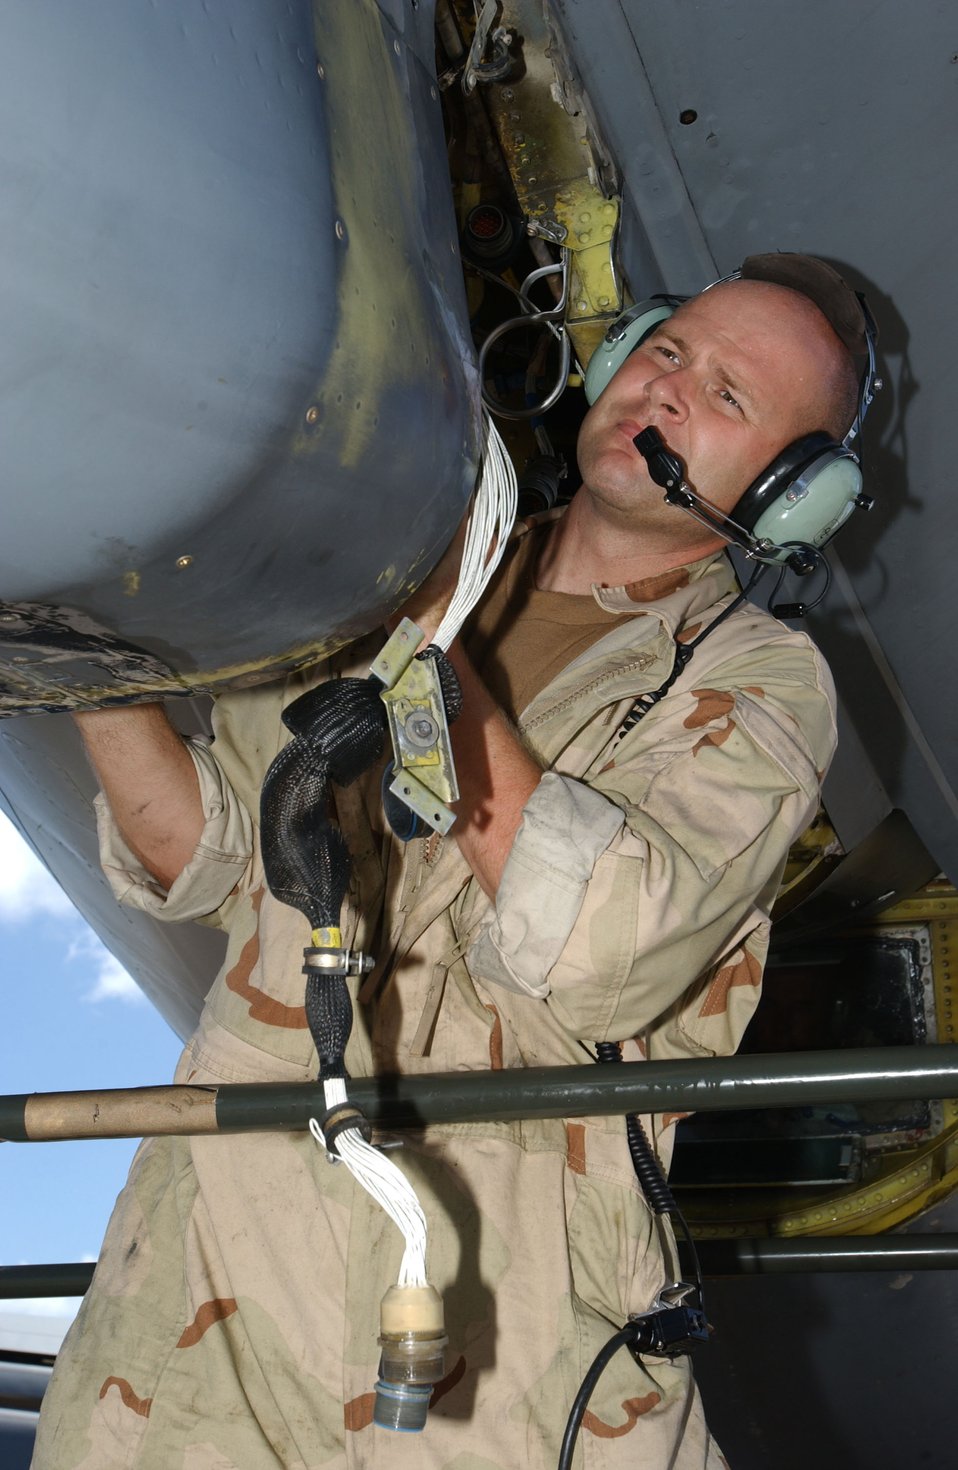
Swappin' out booms

OPERATION ENDURING FREEDOM -- Staff Sgt. Robert Prier changes out a KC-135 Stratotanker boom used to move fuel from the tanker during aerial refueling missions. He is a crew chief with the 28th Expeditionary Air Refueling Squadron at a forward-deployed location and is from MacDill Air Force Base, Fla.